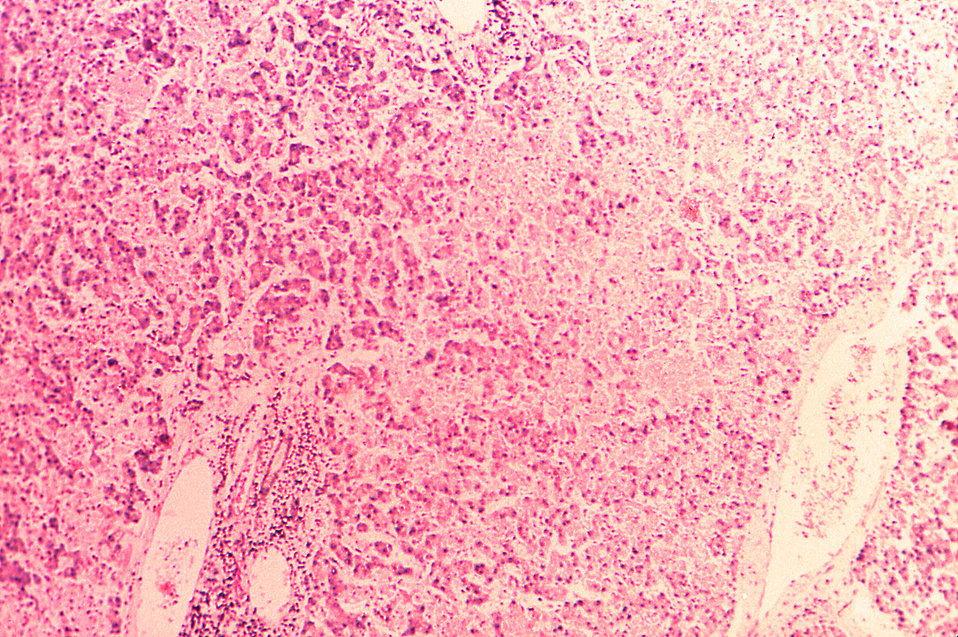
Under a magnification of 100X, this hematoxylin-eosin-stained (H&E) photomicrograph depicts the cytoarchitectural changes found in a liver tissue specimen extracted from a Lassa fever patient. In this particular view you'll note generalized 'acidophilic necrosis and hemorrhagic foci, as well as a periportal inflammatory infiltrate'.